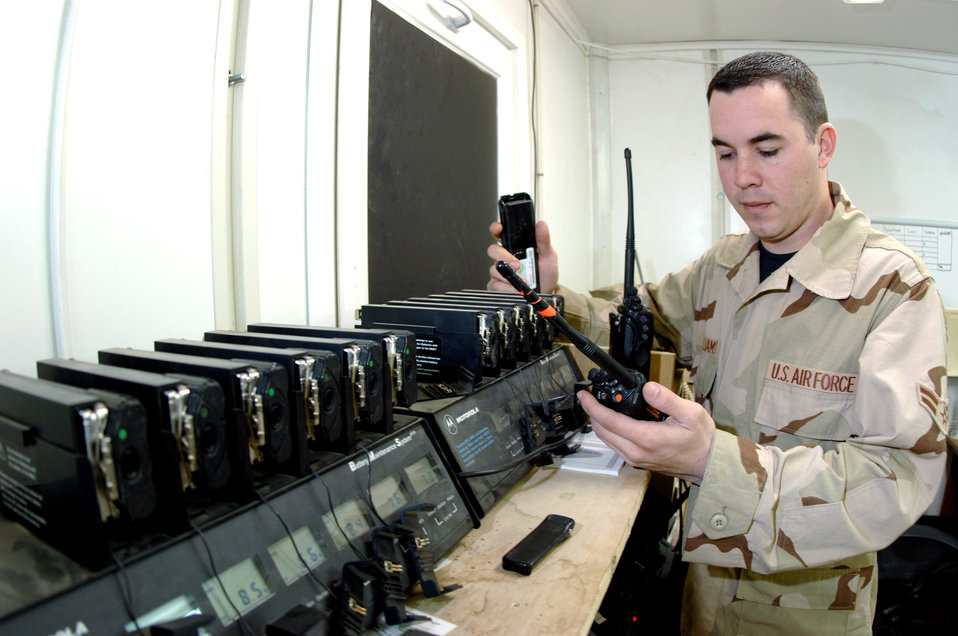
Lines of communication

Airman 1st Class Matthew Williams does an operations check on land mobile radios to verify Airmen are getting proper communications out in the field Jan. 30 at Kirkuk Regional Air Base, Iraq. Airman Williams is a radio maintenance technician for the 506th Expeditionary Communications Squadron.